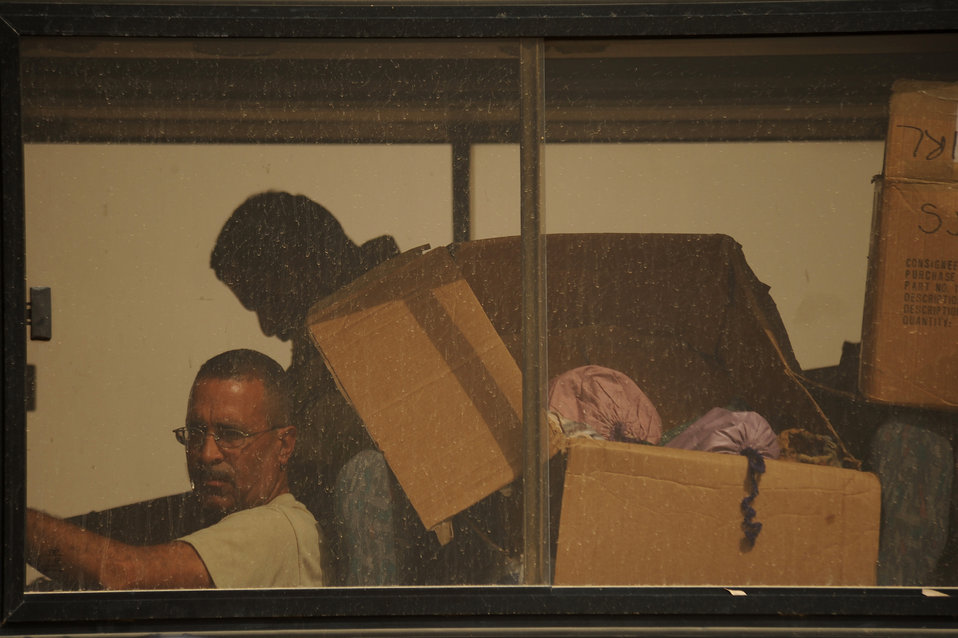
Sather Airmen foster relationships with local community

Tech. Sgt. Pedro Rodriguez looks out at Iraqi children while sitting on a bus loaded with toys and other gifts June 6 at Sather Air Base, Iraq. Sergeant Rodriguez, assigned to the 447th Civil Engineer Squadron,is one of a group of Airmen from the 447th Air Expeditionary Group who delivered dotated goods to local Iraqi children.